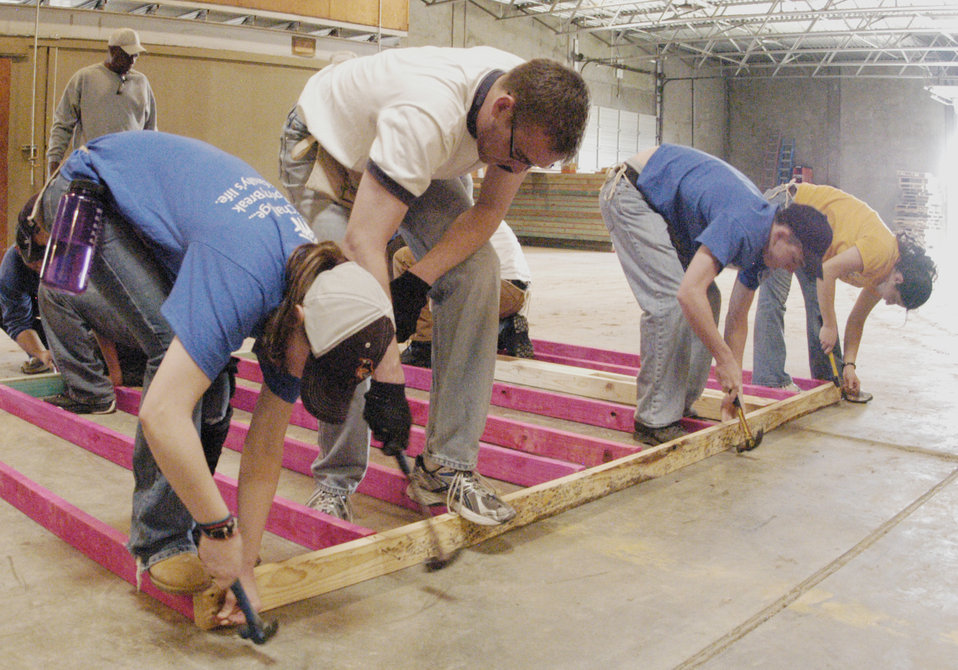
Cadets trade beaches for hammers during alternative spring break

U.S. Air Force Academy Cadets 3rd Class Kirby Forssell and Chris Miller, Cadet 1st Class Michael Bates and Cadet 3rd Class Paola Gavilanes assemble a wall frame March 23, 2010, in Bryan, Texas. The cadets volunteered to travel to the small Texas town and build homes as part of an alternative spring break March 20 through 26.